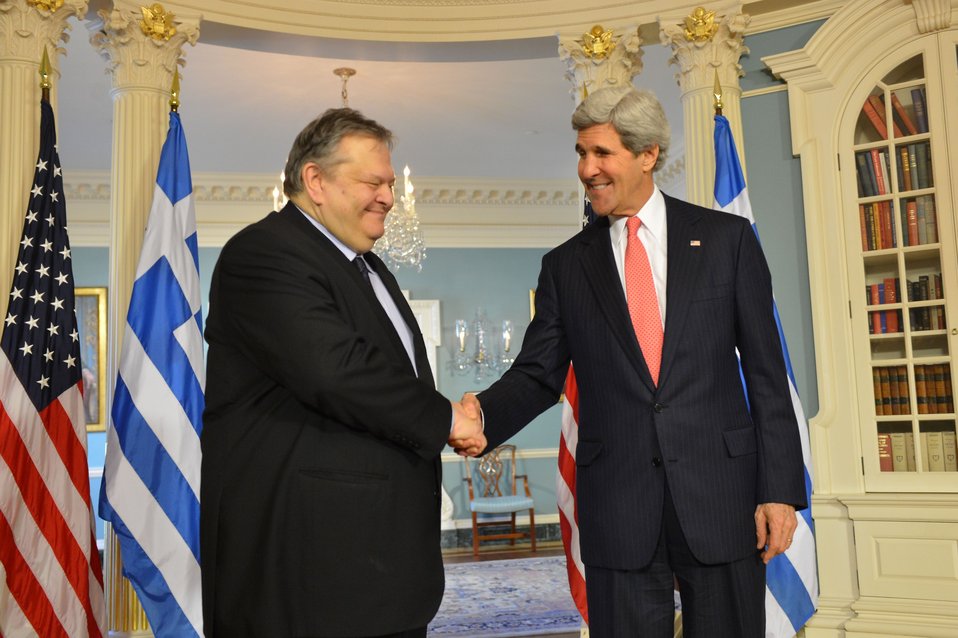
Secretary Kerry and Greek Foreign Minister Venizelos Shake Hands

U.S. Secretary of State and Greek Foreign Minister Evangelos Venizelos shake hands after addressing reporters at the U.S. Department of State in Washington, D.C., on January 17, 2014.